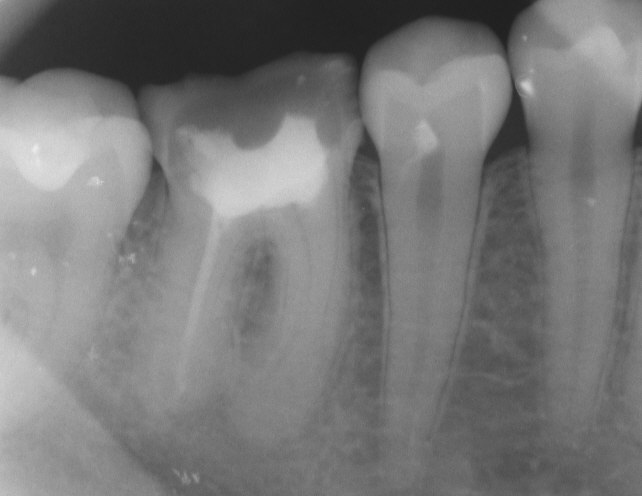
Tooth #30, the lower right first molar, with incomplete endodontic therapy: the mesial roots were left untreated, as can be evidences by the lack of [[w: gutta percha]] in the canals. This tooth requires retreatment to prevent a future infection from the non-treated canals.